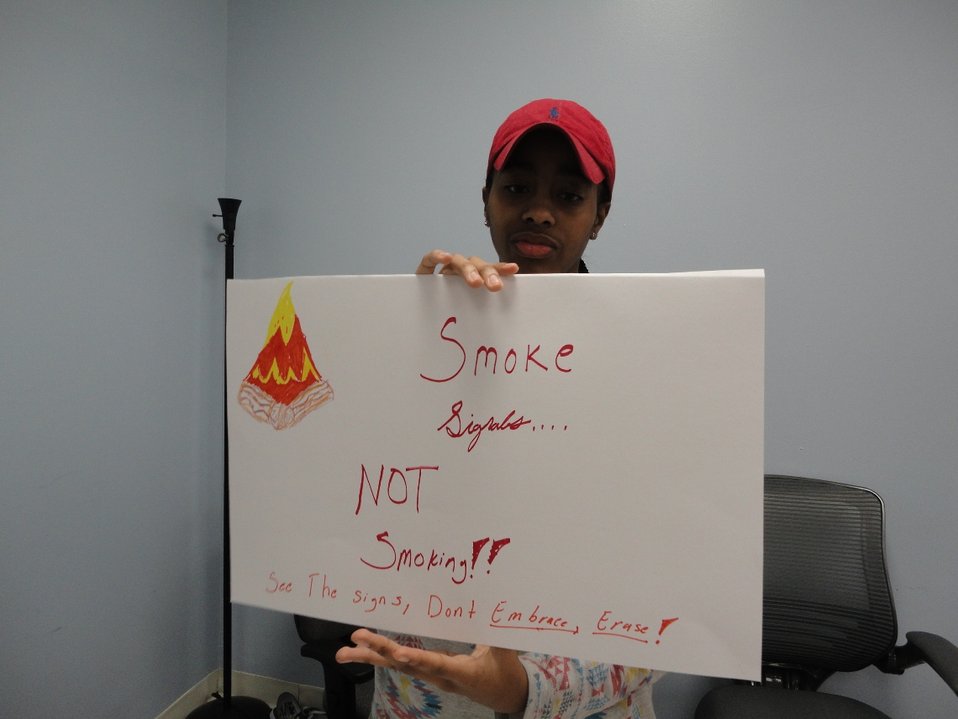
DREAM's, MS Student Advisory Board of Youth Highway Safety NDFW 2013

Mississippi High School Students participate in NDFW 2013 events.